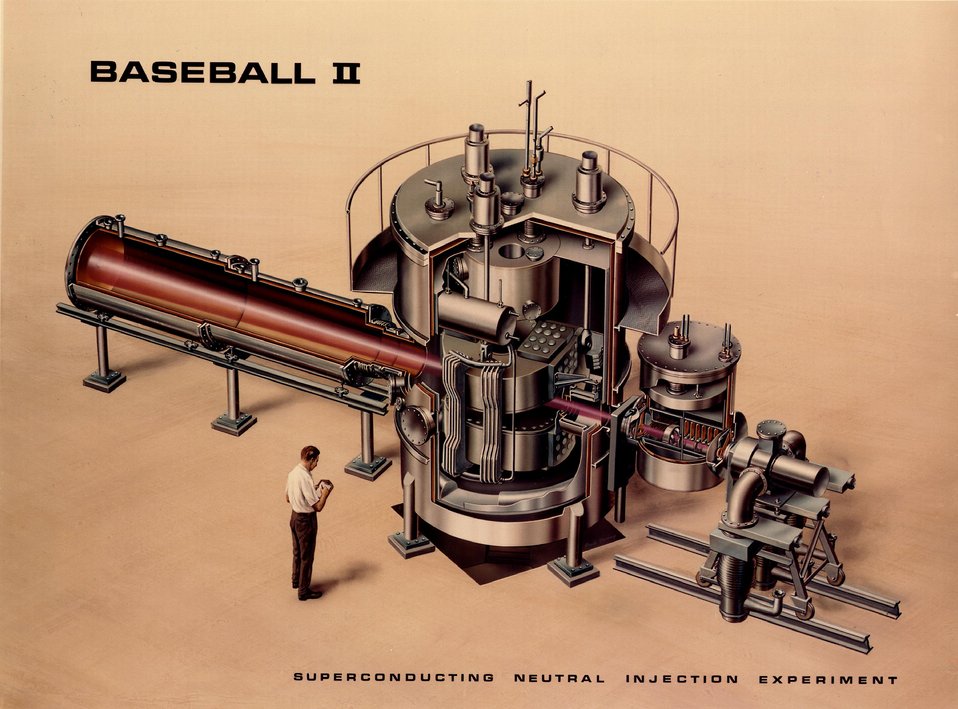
Artist's sketch of the Baseball II plasma confinement experiment. Circa 1973.